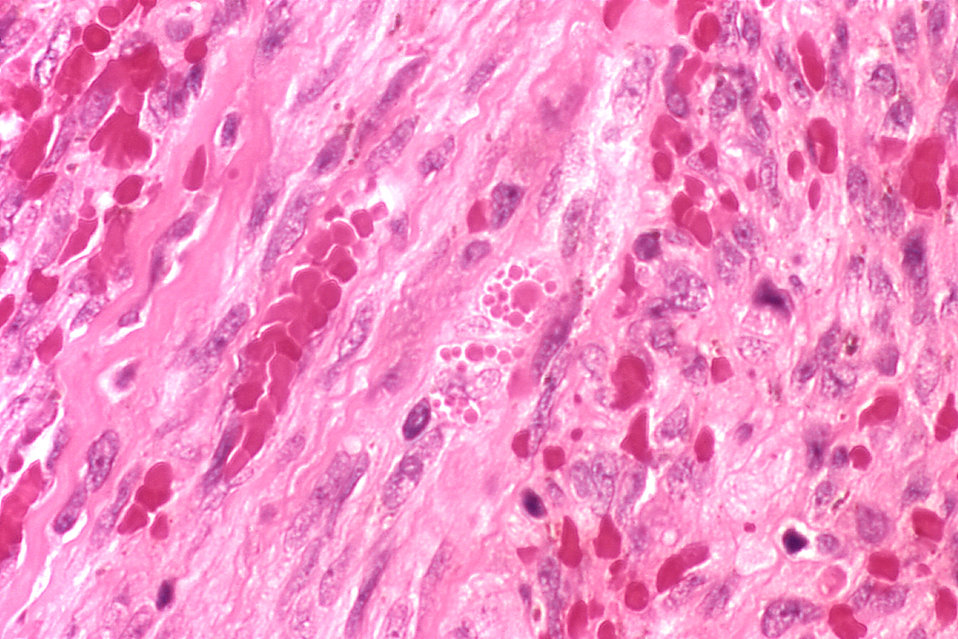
This micrograph depicts the histopathologic changes found in a biopsied lymph node indicative of a Kaposi's sarcomatous lesion from a patient with Acquired Immunodeficiency Syndrome, also known as AIDS.